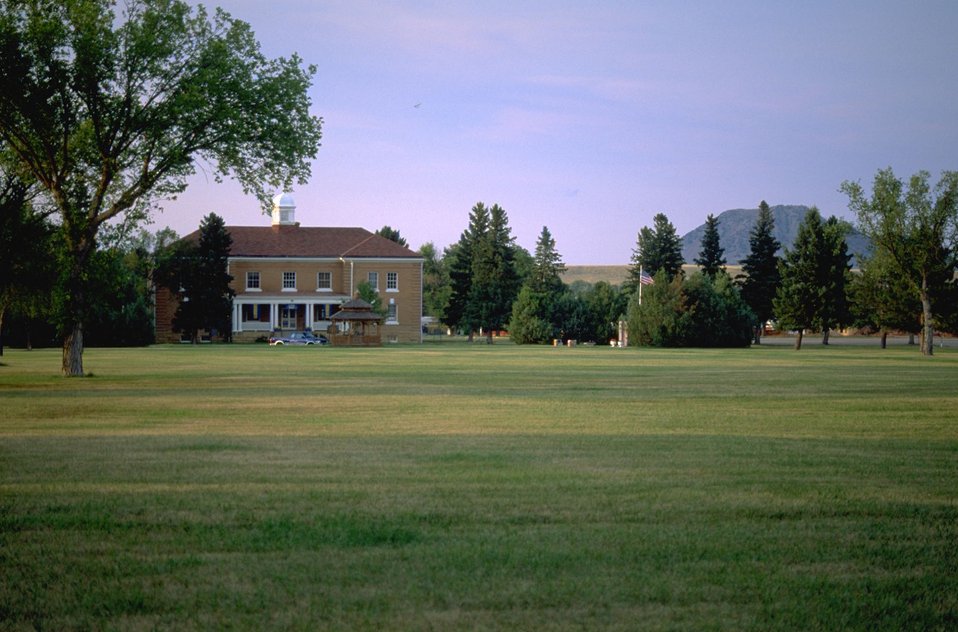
Historic Fort Meade building with Bear Butte in background